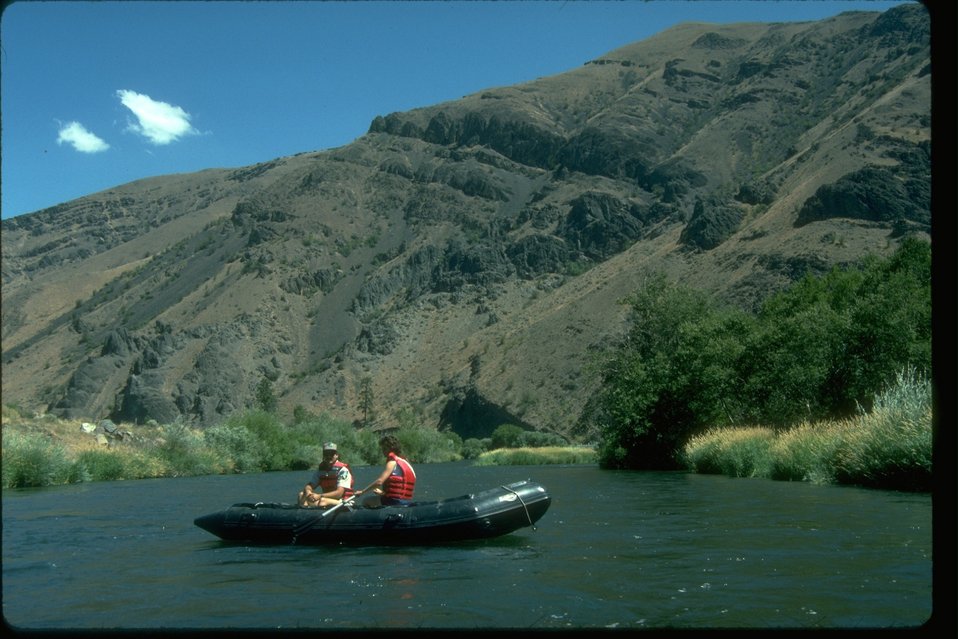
Rafting the Yakima River in Yakima County, WA.